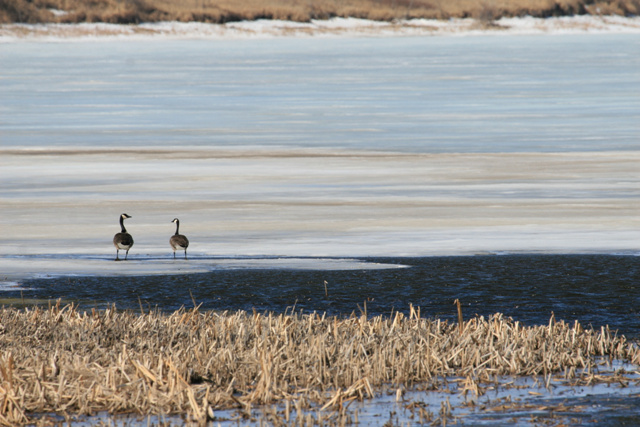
Canada Geese Pair on Ice